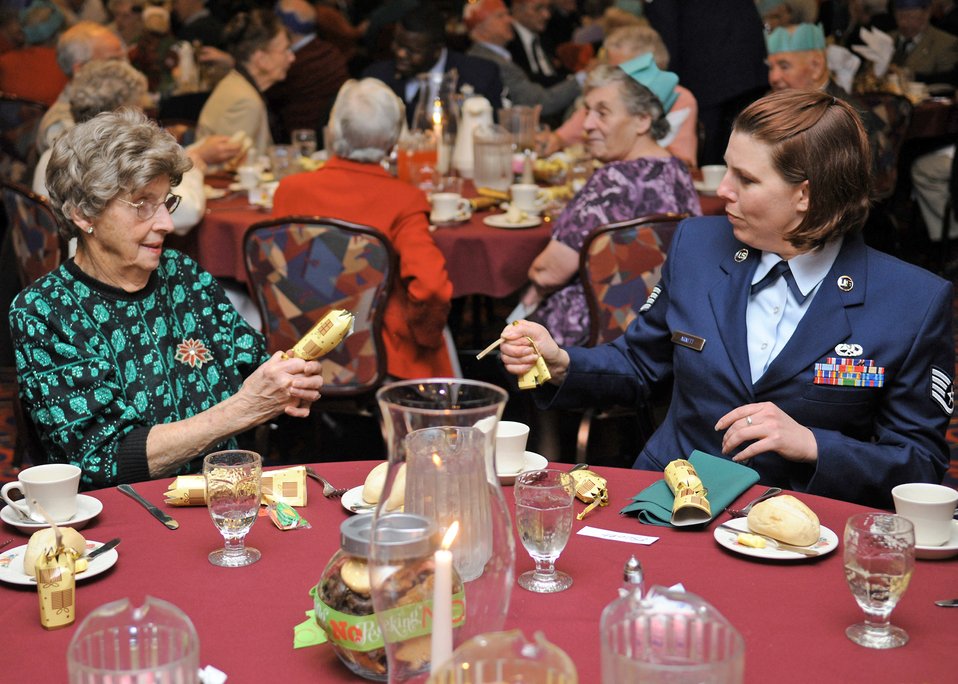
Crack the cracker!

Joan Aves and Staff Sgt. Wendy Arnett open Christmas crackers during the senior citizens holiday luncheon Dec. 2, 2009, at Royal Air Force Mildenhall, England. The event gives senior citizens in the local area an opportunity to have lunch, play games and meet new people. Sergeant Arnett is with the 352nd Maintenance Squadron.